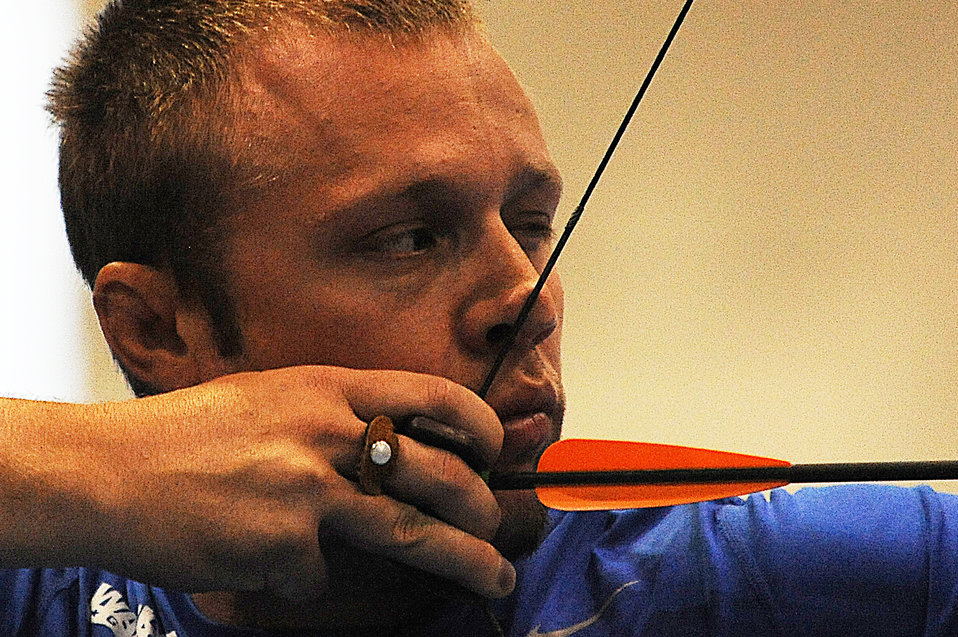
Warrior Games

Kendall Madden aims at his target during the archery competition of the 2012 Warrior Games at the U.S. Air Force Academy in Colorado Springs, Colo., May 2, 2012. Madden is with the Air Force team.